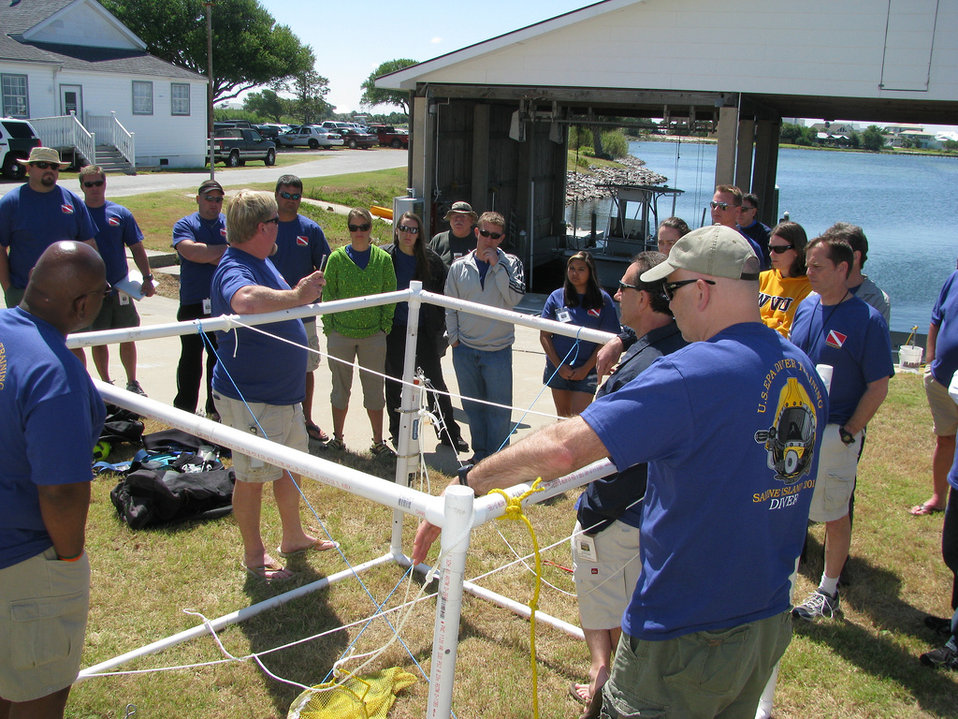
U.S. EPA Dive Training, entanglement hazard station

Dive students are first briefed on land about the entanglement station by Training Director Jed Campbell, US EPA. Then they're challenged with it underwater.

Avoiding and solving entanglement problems are one of the key skills taught at the course. EPA diver training takes place each year at the Office of Research and Development (ORD) Gulf Ecology Division (GED) in Gulf Breeze, Florida.